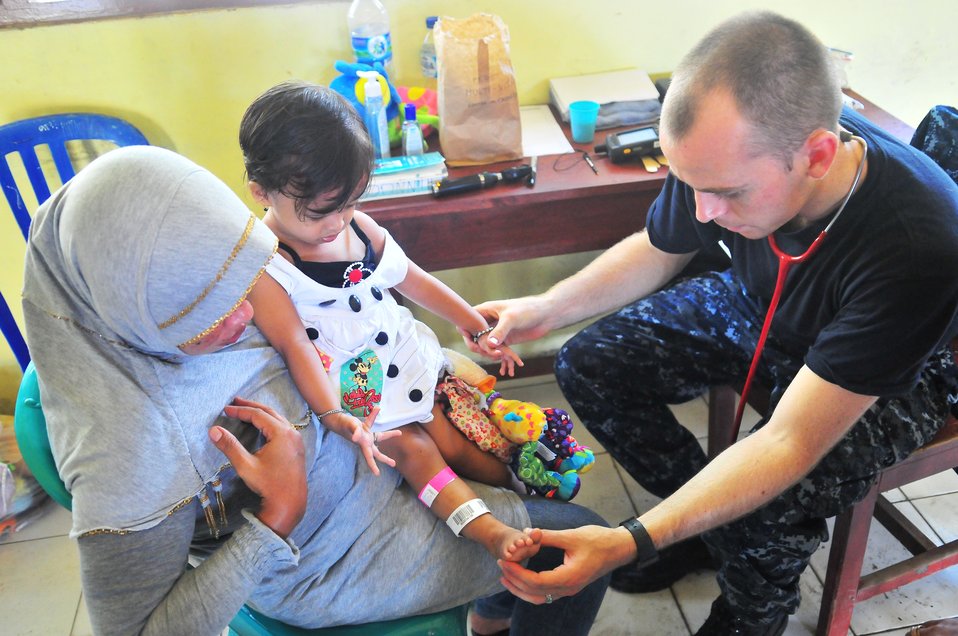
Lt. Timothy Chinnock Examines an Indonesian Infant’s Feet While Her Mother Looks On

Lt. Timothy Chinnock, from USNS Mercy (T-AH 19), examines an Indonesian infant’s feet while her mother looks on during a medical civic action program in support of Pacific Partnership 2010 in Tobelo, Indonesia, on July 15, 2010. Pacific Partnership 2010 is the fifth in a series of annual U.S. Pacific Fleet endeavors conducted in Indonesia as a disaster relief exercise to strengthen regional partnerships.